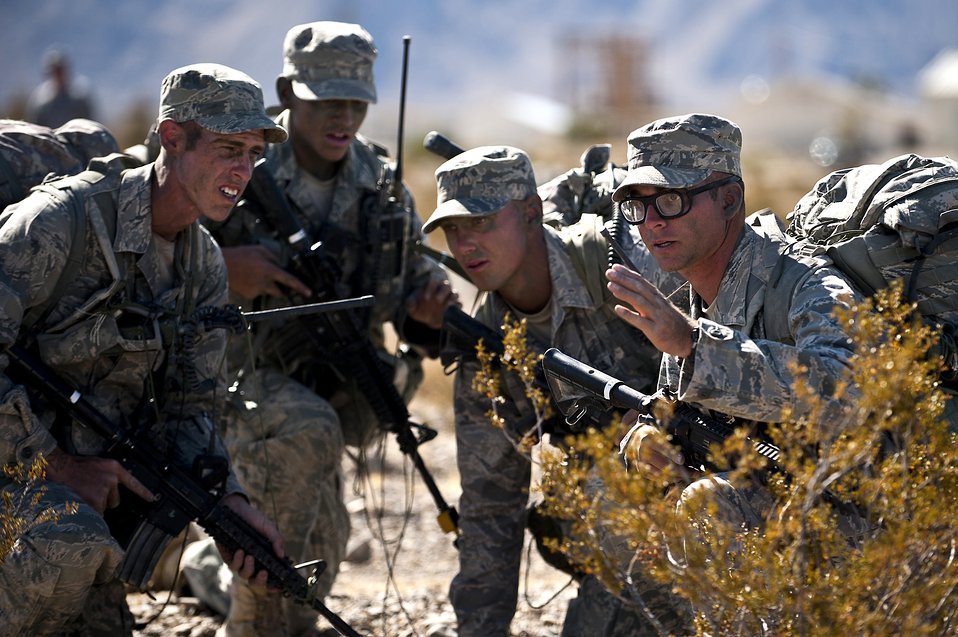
Ranger up

Airmen training as squad leaders discuss tactics for an ambush training mission Oct. 21, 2011, at the Nevada Test and Training Range in southern Nevada during the Ranger Assessment and Selection course. Airmen must attend the RAS course before going to the Army Ranger School.